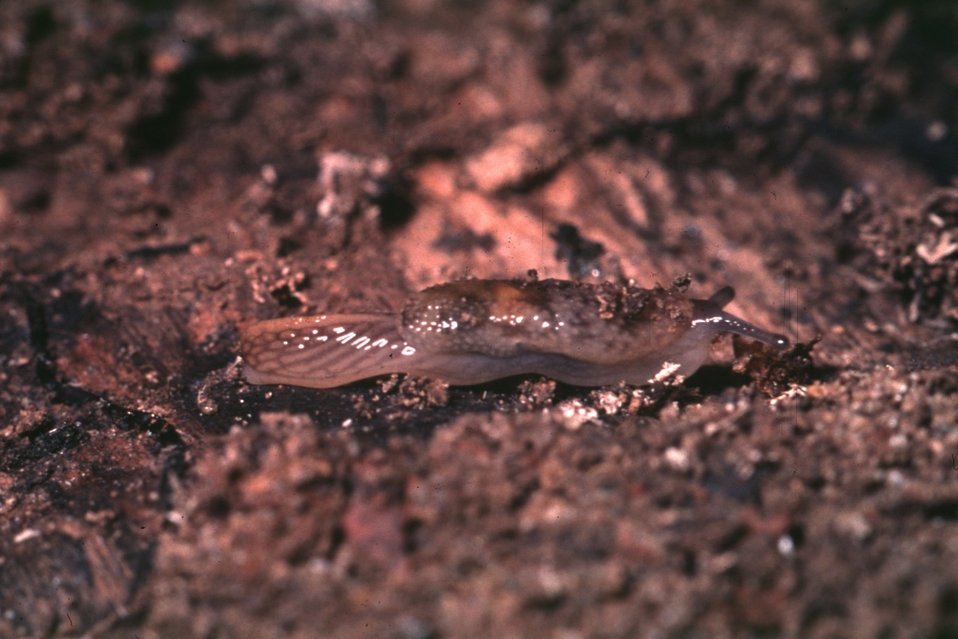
Warty jumping-slug (Hemphillia glandulosa).